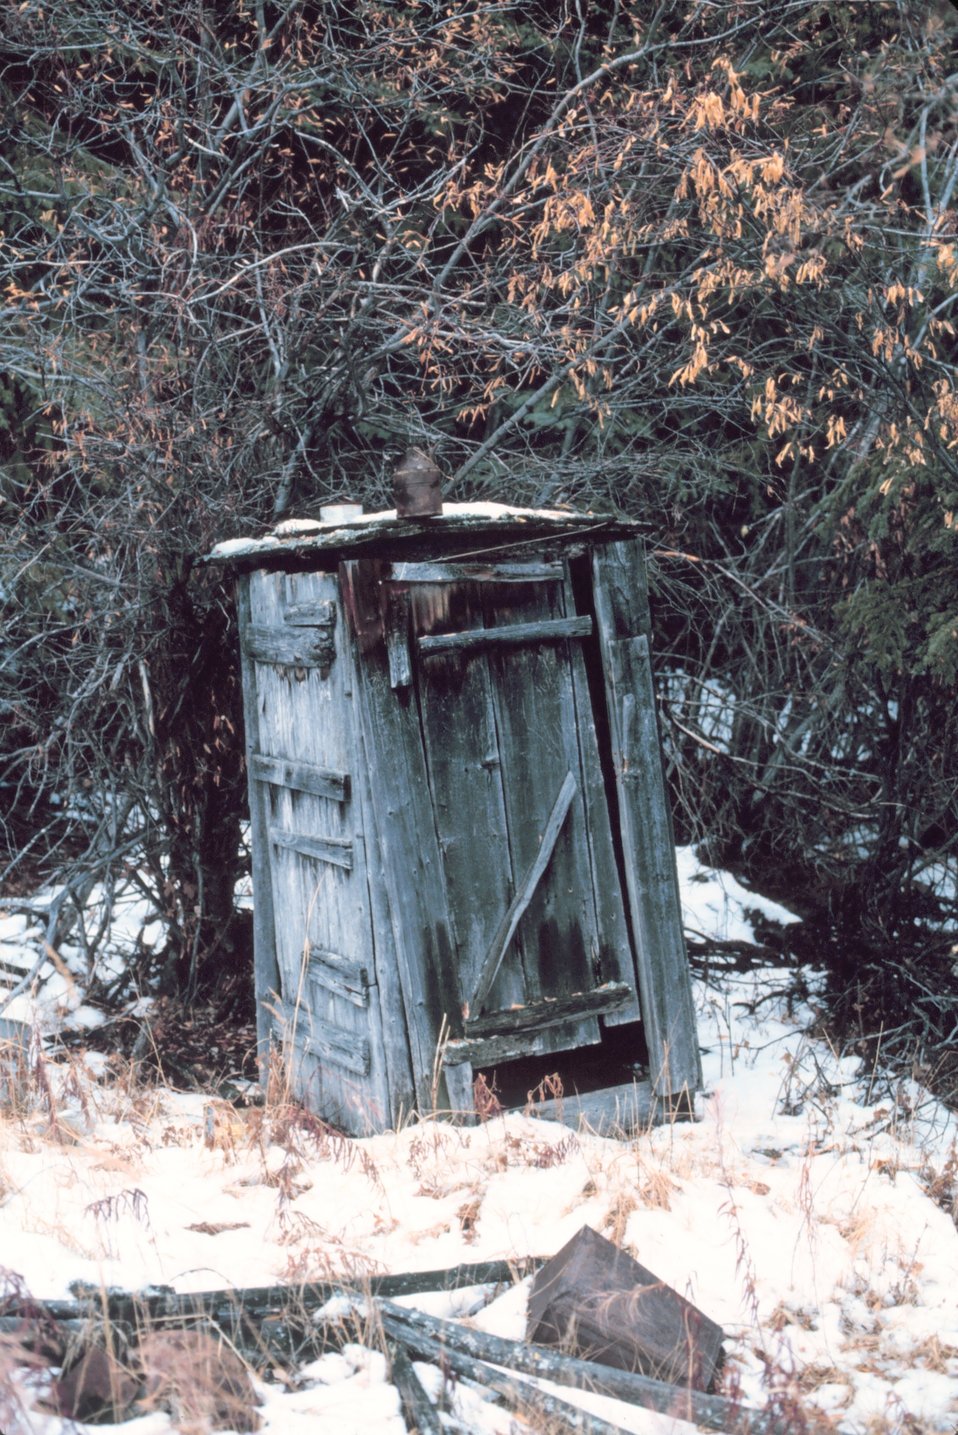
The most important building on an old Alaska homestead.